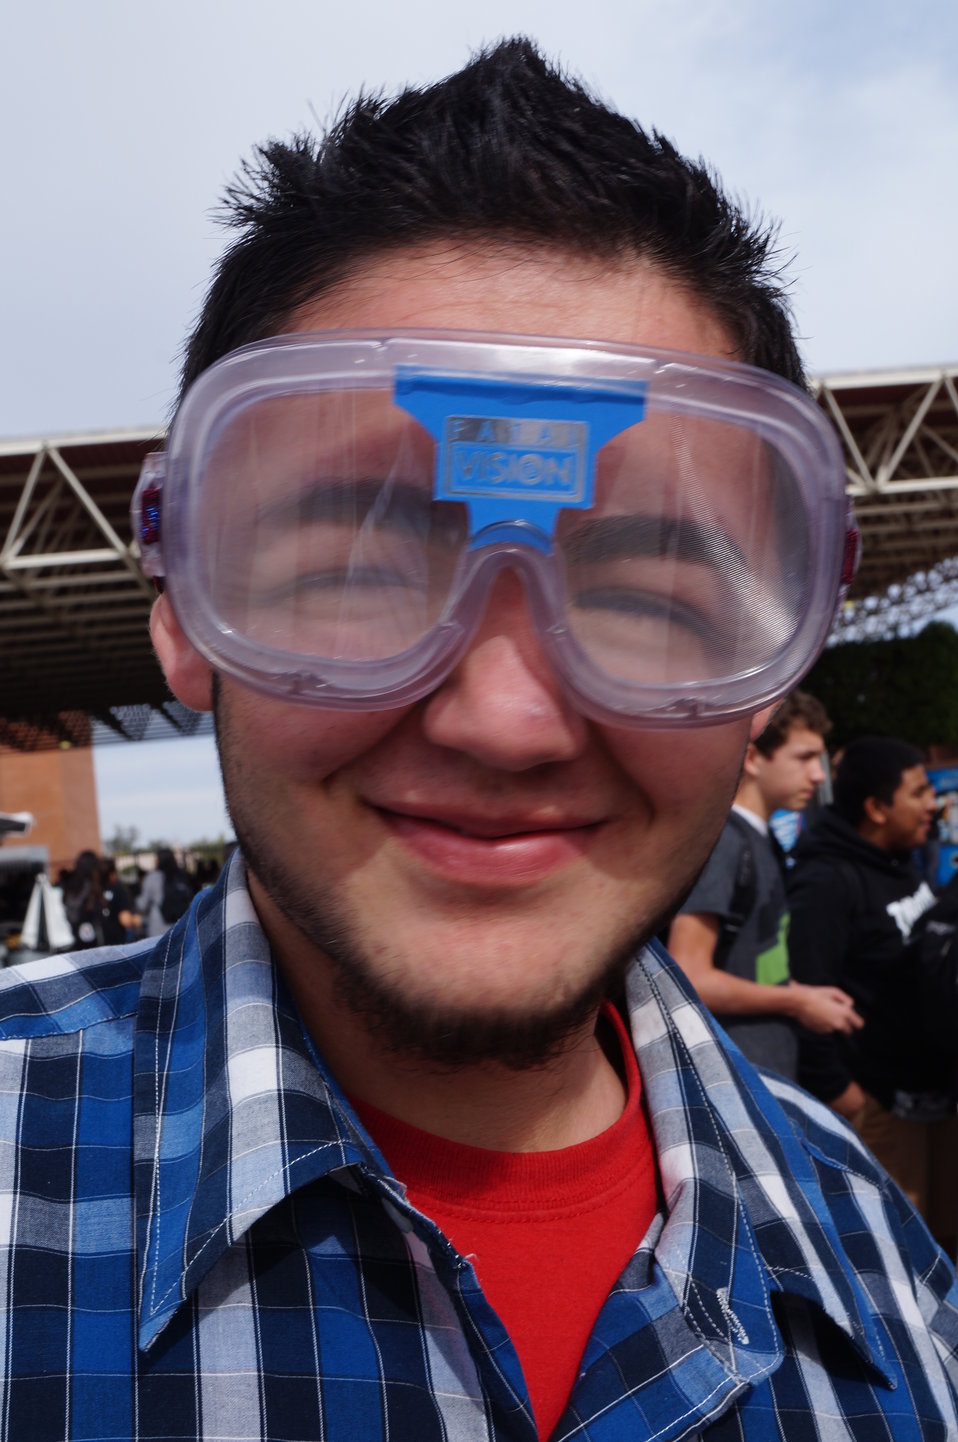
Nationa Drug Facts Week - CIBOLA HS

The Drug Demand Reduction Program out of Yuma, Arizona held numerous events at local schools to support NIDA's National Drug Facts Week, Jan. 27-Feb. 2 2014. Teens participated in drug awareness games, and helped to Shatter the Myths about teen substance abuse.